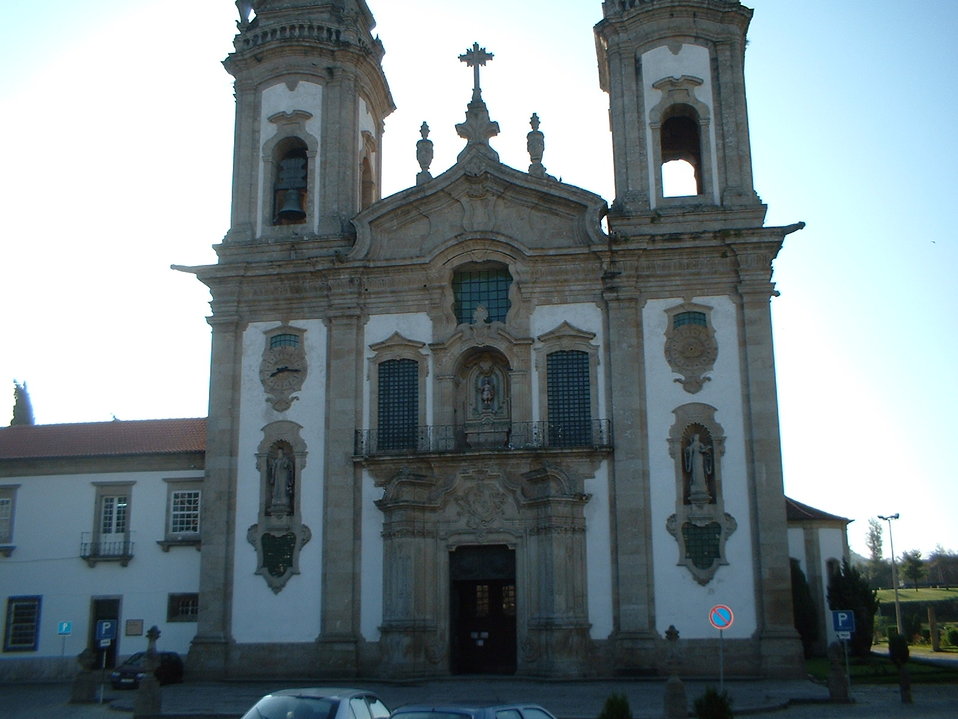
Esta foto também fui eu quem a tirou. Francisco Miguel Rodrigues Descrição: fachada principal da igreja do Mosteiro de Sao Miguel de Refojos, em Cabeceiras de Basto Fonte e créditos: (Máquina fujifilm de Francisco Miguel Rodrigues) Licença: